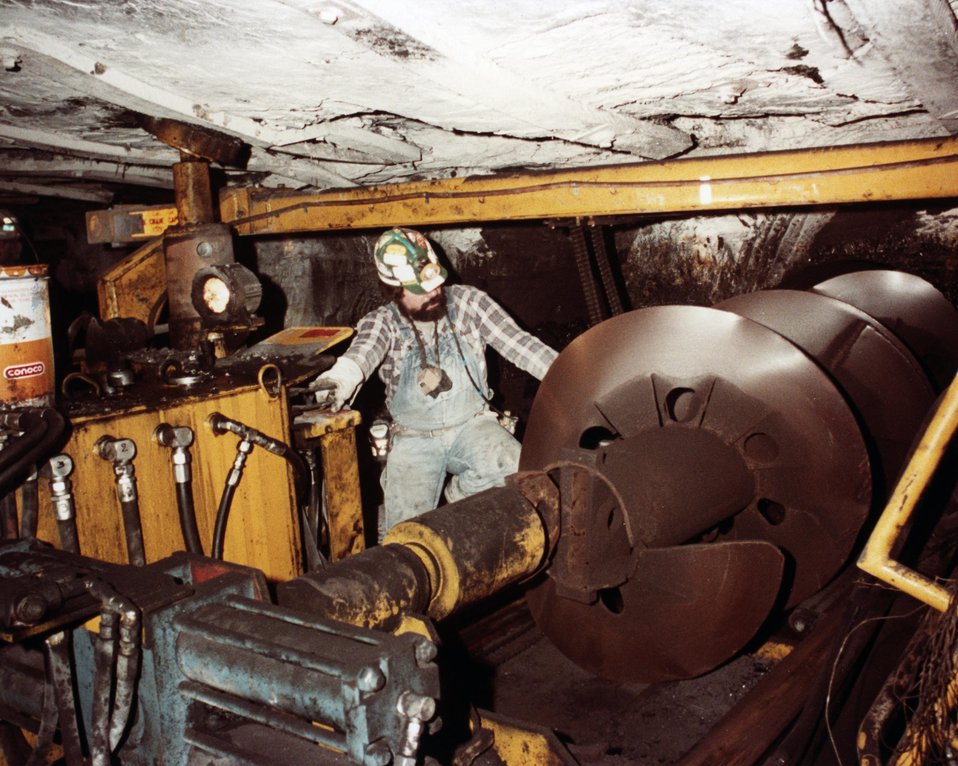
CLOSE-UP OF AUGER BIT, PARTIALLY INSERTED INTO HOLE.

THE BI-DIRECTIONAL AUGER IS BEING DESIGNED TO EXTRACT COAL FROM THE NORMAL SIZE PILLARS LEFT IN ROOM-AND-PILLAR MINING. BY DRILLING INTO TWO PILLARS FROM THE SAME LOCATION, A GREAT DEAL OF THE NONPRODUCTIVE TRAMMING IS ELIMINATED. BY DRILLING MUCH SHORTER BORE HOLES THAN THE PRESENT UNIDIRECTIONAL AUGER, FEWER INTERSECTING HOLES WHICH WANDER INTO ROOF OR BOTTOM ROCK ARE EXPECTED. THE NET RESULT IS A THEORETICAL 40% MORE PRODUCTIVE MACHINE THAN THE UNIDIRECTIONAL AUGER. ALSO, CREW SIZE IS REDUCED BY ONE. PARTLY BECAUSE THE MACHINE IS REMOTELY CONTROLLED AND PARTLY BECAUSE THE AUGER SEGMENTS ARE NOT REMOVED FROM THE MACHINE, THE OPERATION IS MUCH SAFER. DRILLING INTO STANDARD SIZE PILLARS OFFERS A TRUE INCREASE IN RECOVERY.